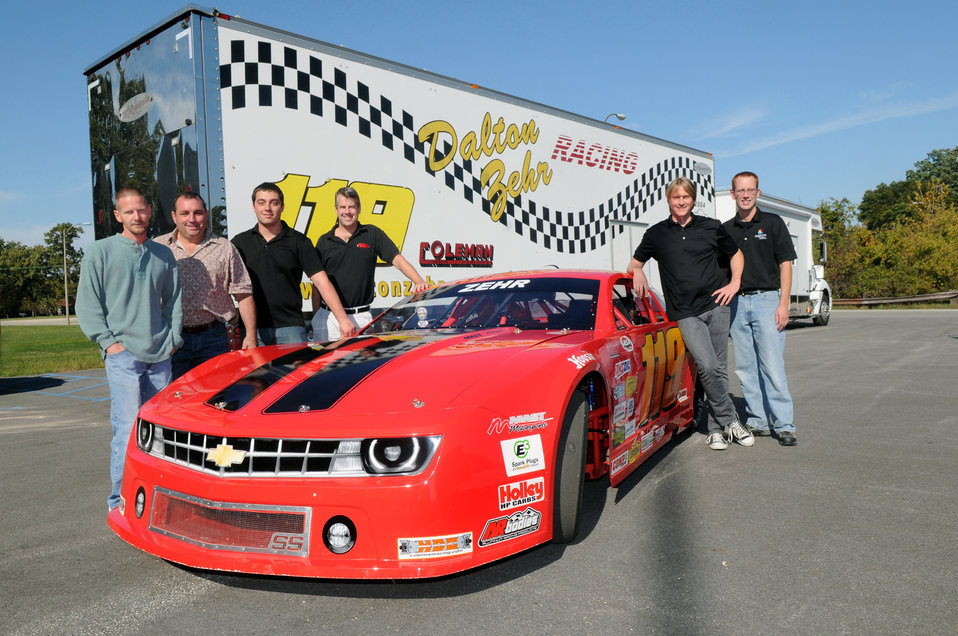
Argonne National Laboratory is moving forward in its Green Racing Research Program.